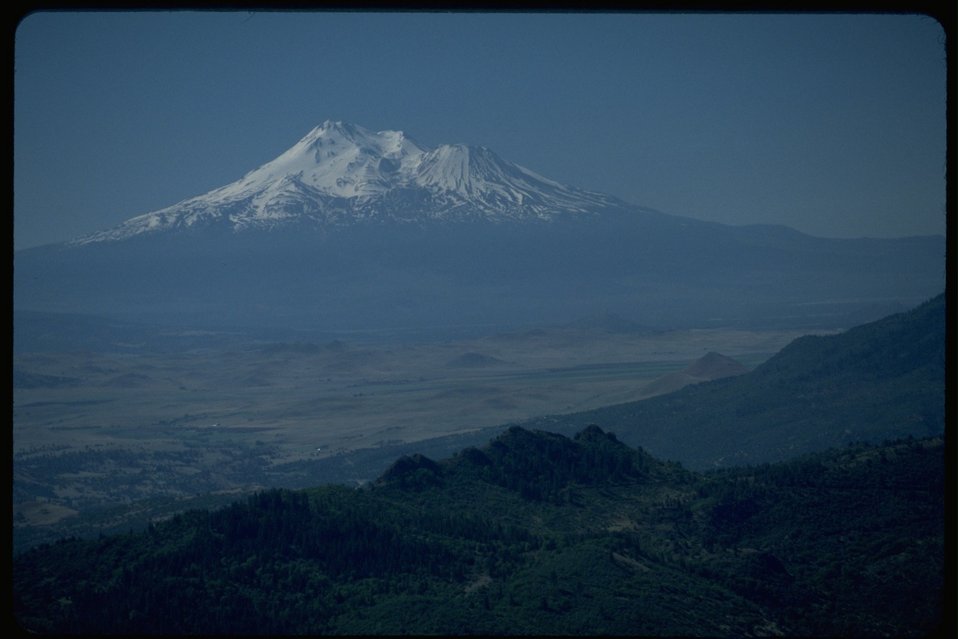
Telephoto shot of Mount Shasta.